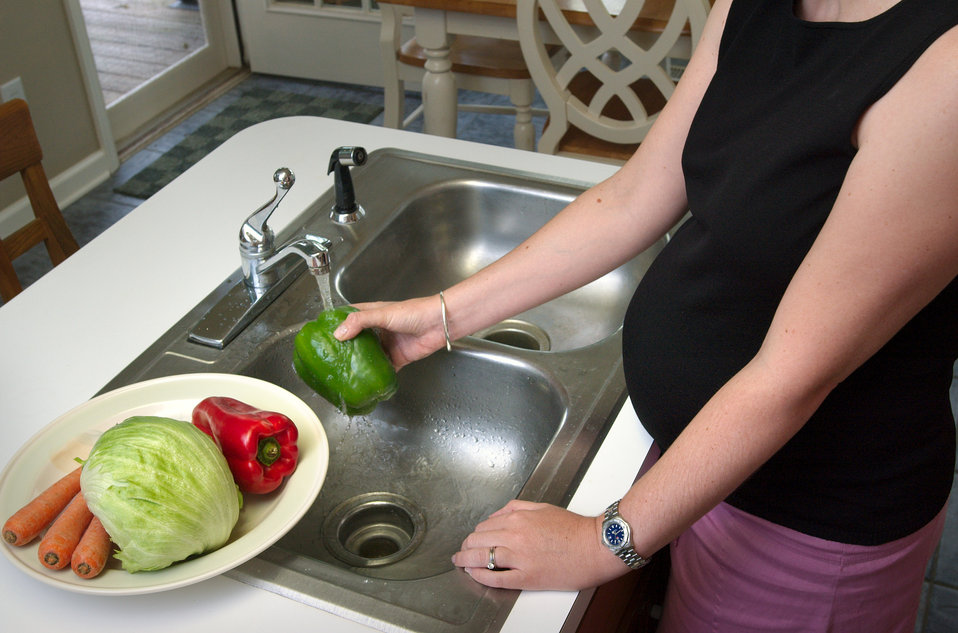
This photograph showed a pregnant woman in the process of washing a batch of assorted produce prior to the preparation of a salad. Note that the food preparation area around the sink is also kept clean, and free of unclean kitchen implements either inside, or outside the sink.Foodborne disease is caused by consuming contaminated foods or beverages. Many different disease-causing microbes, or pathogens, can contaminate foods, so there are many different foodborne infections. In addition, poisonous chemicals, or other harmful substances can cause foodborne diseases if they are present in food.